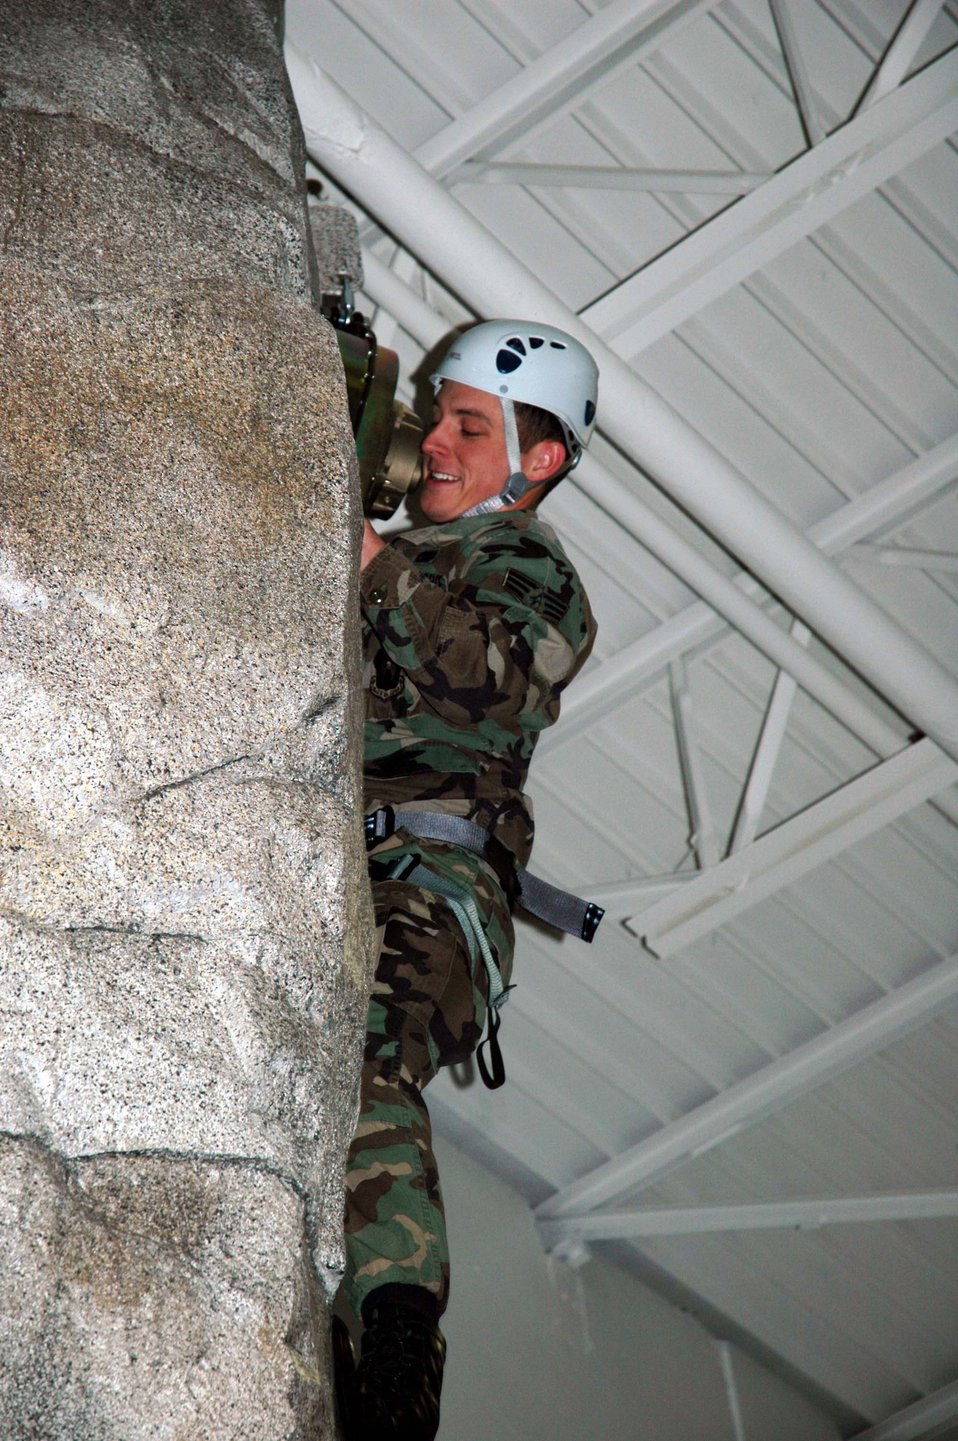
Treasure Island opens at Minot

MINOT AIR FORCE BASE, N.D. -- Senior Airman Brandon Helton scales the rock climbing wall during the opening day of Treasure Island here Dec. 23. Treasure Island is an indoor recreation center featuring a skating park, miniature golf course, batting cages and rock climbing wall.